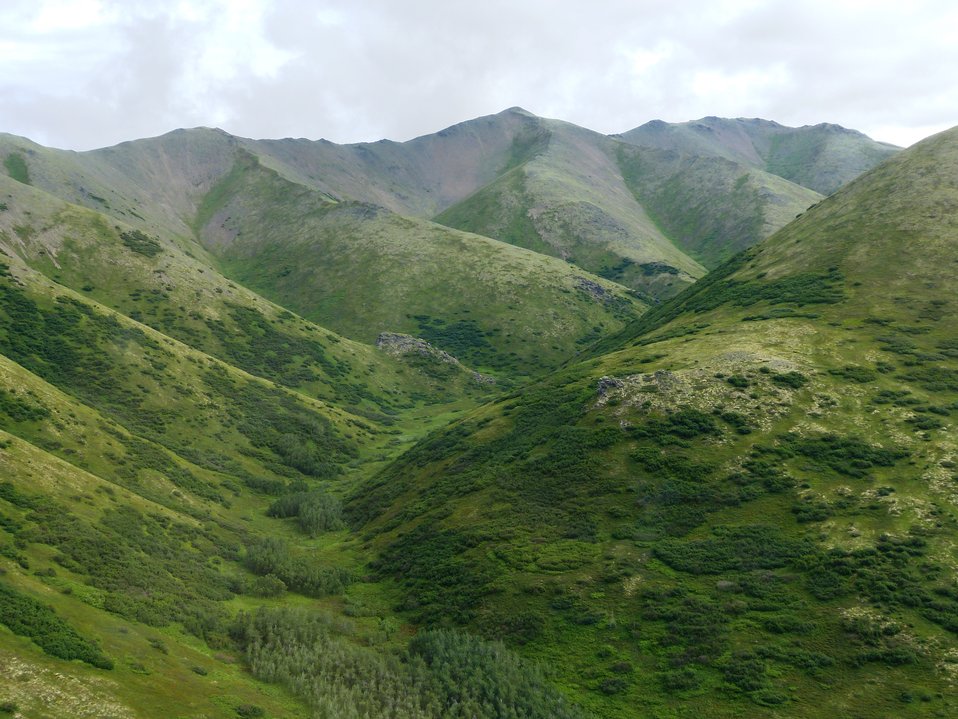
Kilbuck Mountains, Yukon Delta National Wildlife Refuge

Photo by: Kristine Sowl,
USFWS, Yukon Delta NWR, July 10, 2013